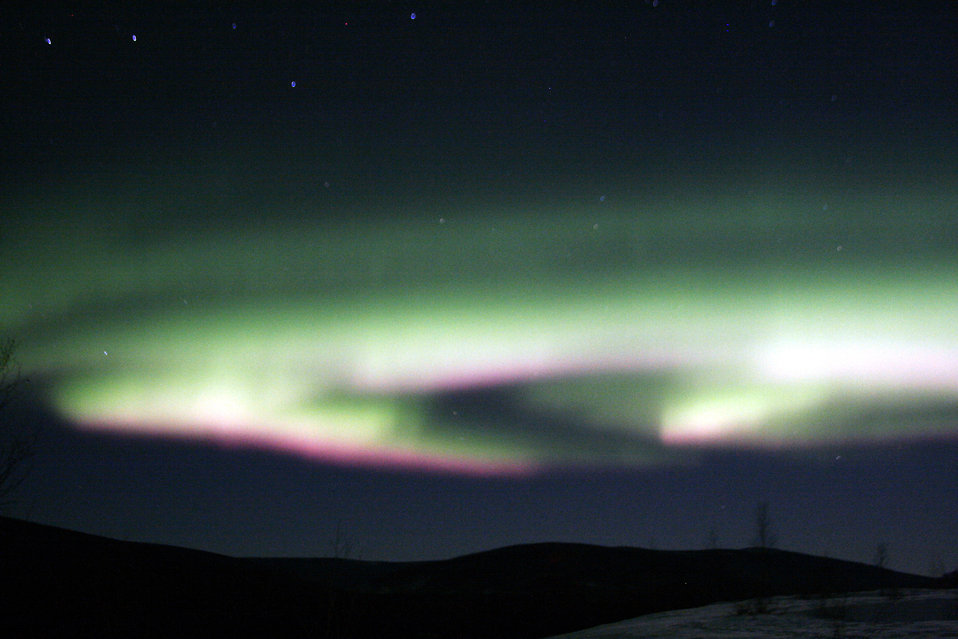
Northern Lights

A view of the Northern Lights